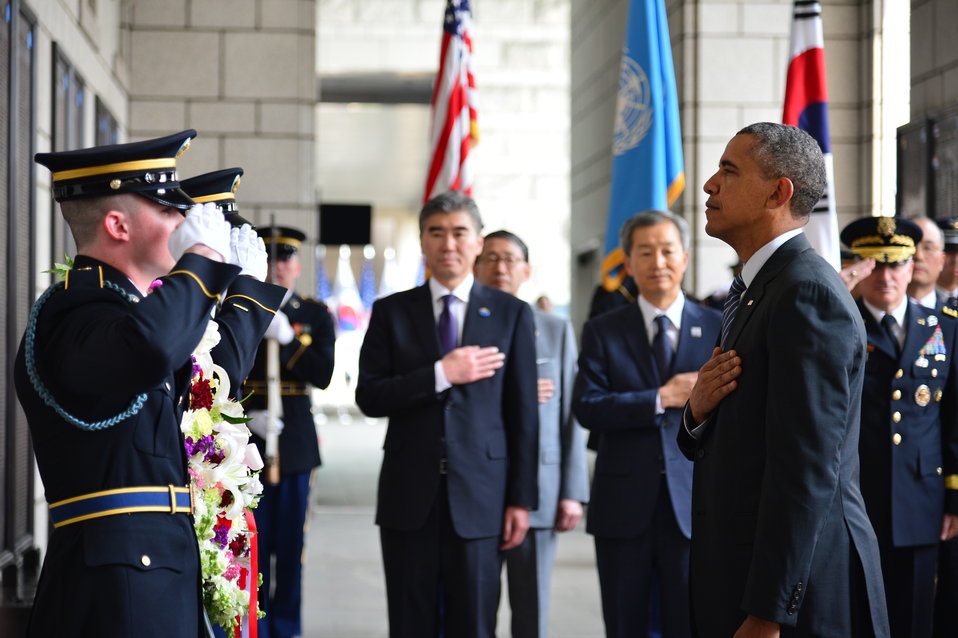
President Obama Participates in a Wreath-Laying Ceremony at the National War Memorial

President Barack Obama participates in a wreath-laying ceremony at the National War Memorial in Seoul, Republic of Korea on April 25, 2014.